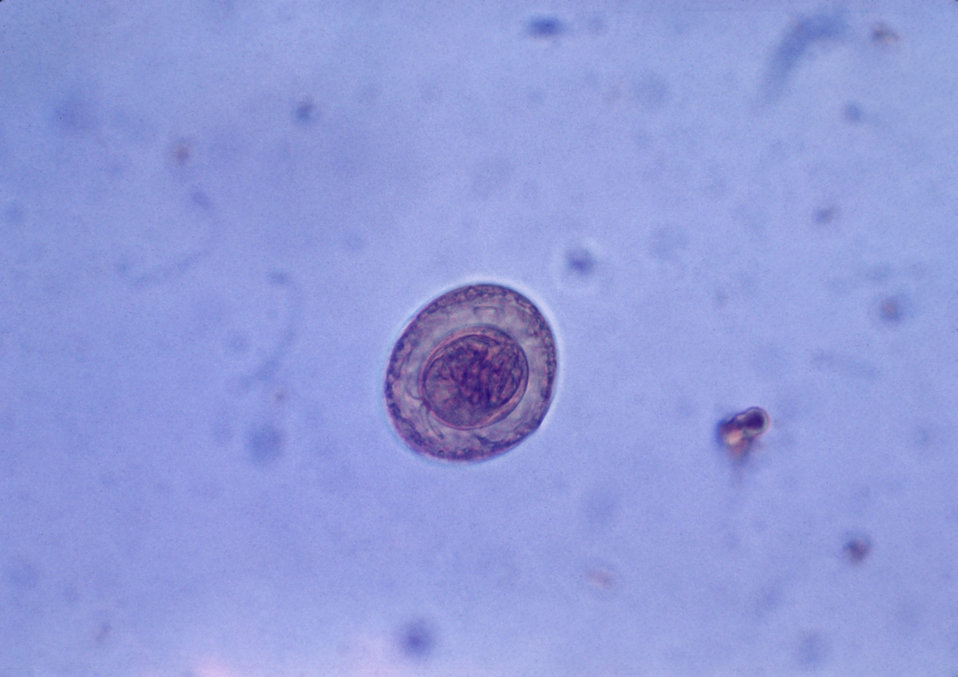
Egg of a Hymenolepis nana parasite.